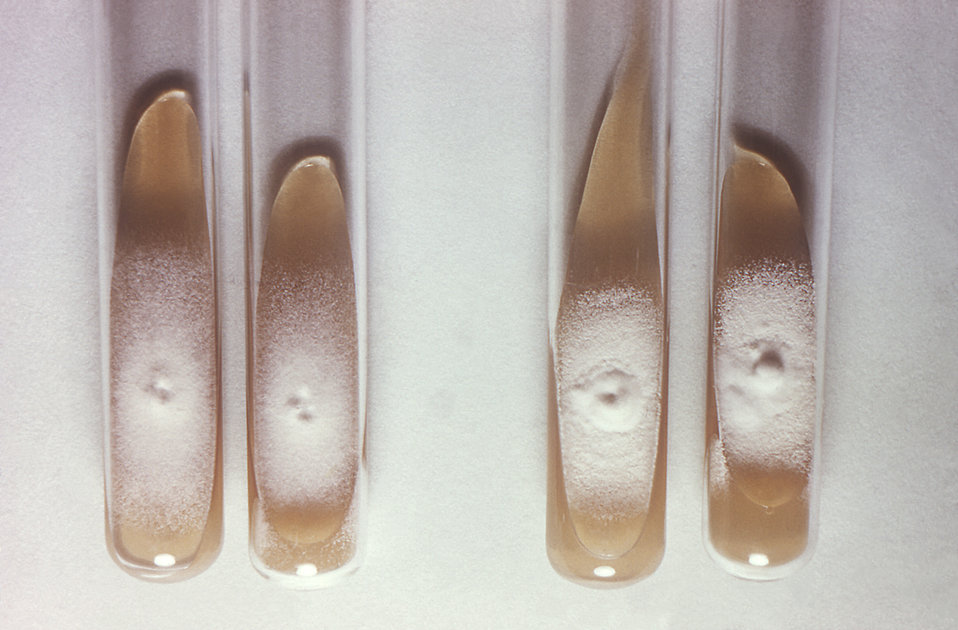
This image depicts the results of a nutrition test upon two strains of the dermatophytic fungus, Trichophyton mentagrophytes. On the left were two test tubes containing casein rich agar medium, upon which a granular strain of the fungus had been cultivated, and on the right the tubes contained a casein plus thiamin medium upon which a downy strain had been cultivated.